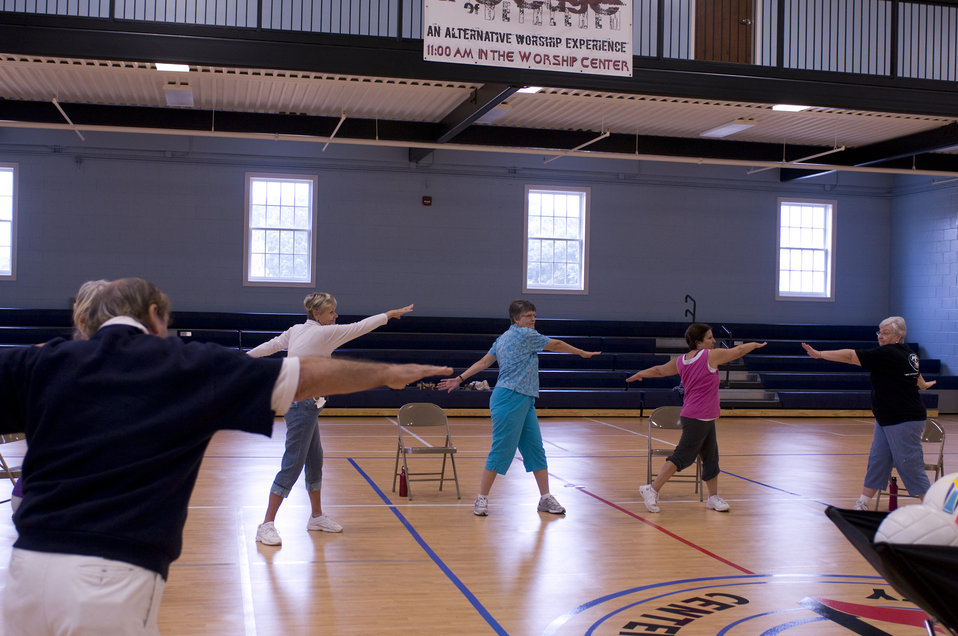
The older individuals pictured here on the wooden floor of an indoor basketball court, were participating in an exercise class consisting of stretching, and aerobic repetitive motion movements. In this particular view, the group members were stretching their torso muscles by extending their arms, and rotating their upper body, while leaving their feet stationary.